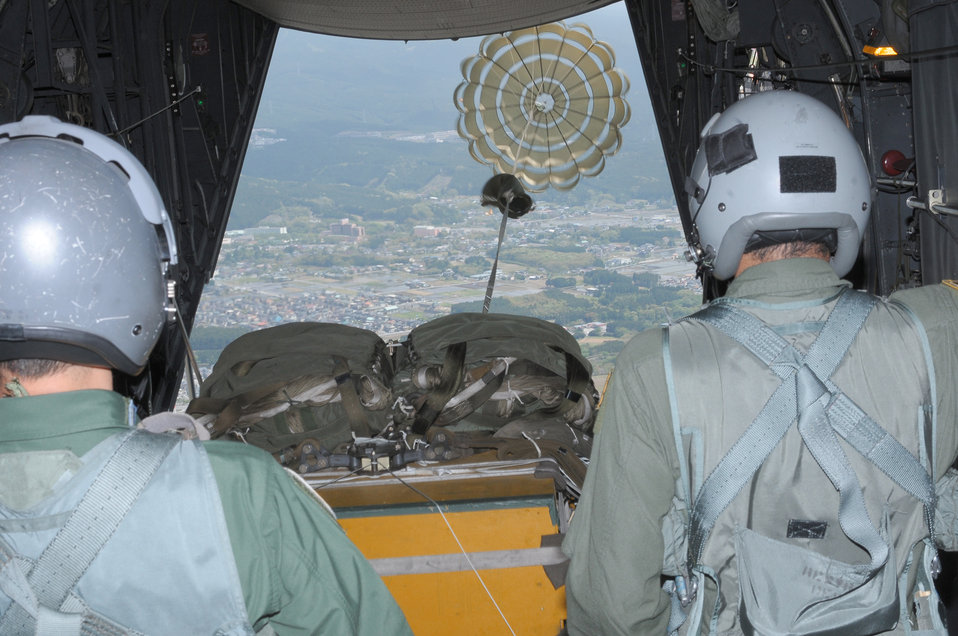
Away she goes

Airmen from Yokota Air Base, Japan, release a heavy equipment bundle from a C-130 Hercules May 6, 2010, during a joint air delivery inspection training mission.